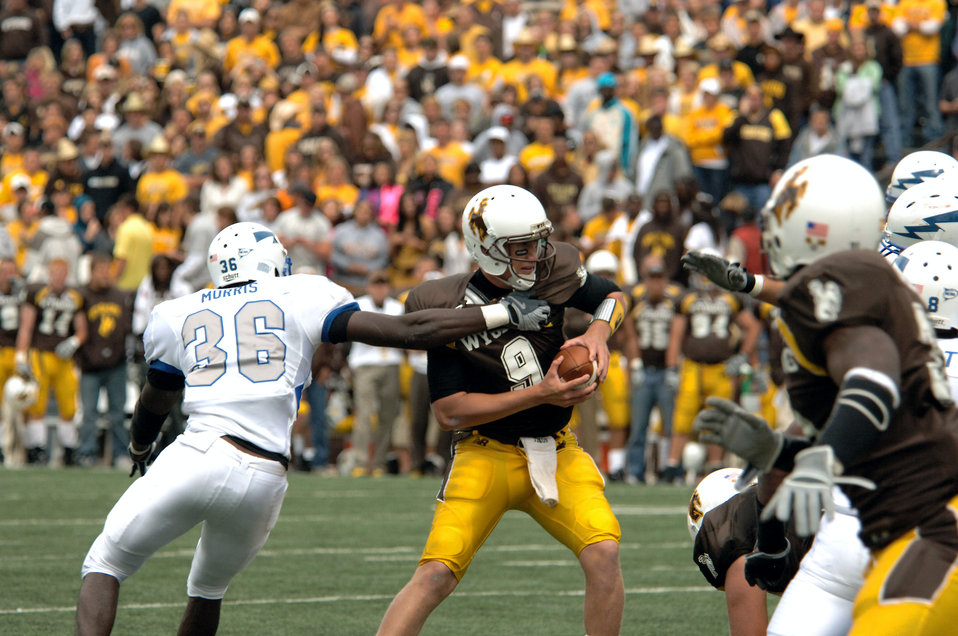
Football: Falcons defense stifles Wyoming, 23-3

U.S. Air Force Academy linebacker Andre Morris makes sure Wyoming quarterback Dax Crum doesn't escape his grasp and tackles Crum for a four-yard loss Sept. 6 in Laramie, Wyo. Falcon defenders recorded four sacks, five tackles for losses, forced three fumbbles and held Wyoming to only 216 yards total offense. The Falcons' defense has only allowed 10 points this season.